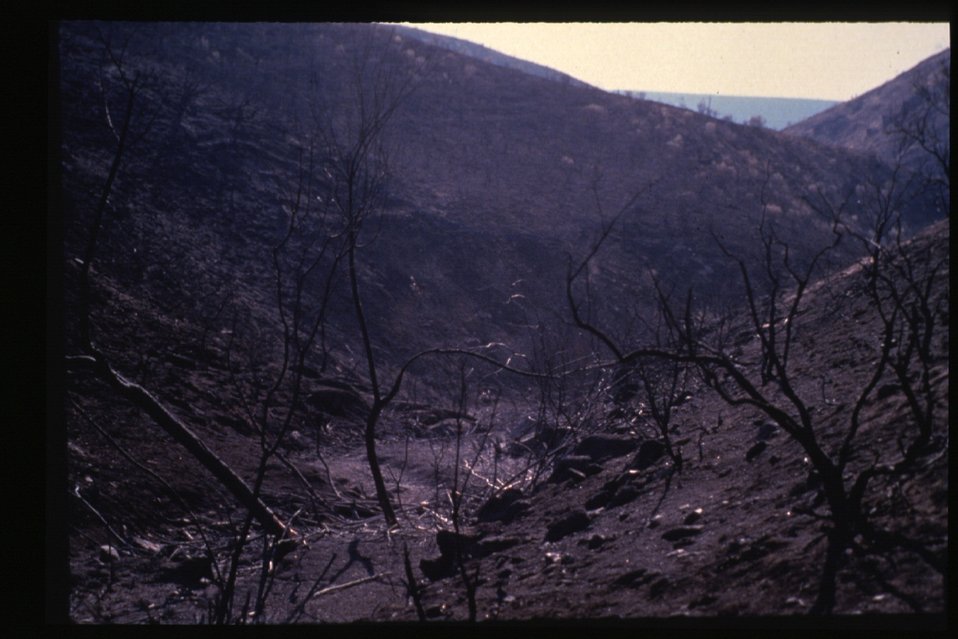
Fire 8th Street Fire Hulls Gulch Four Rivers Field Office LSRD Lower Snake River District